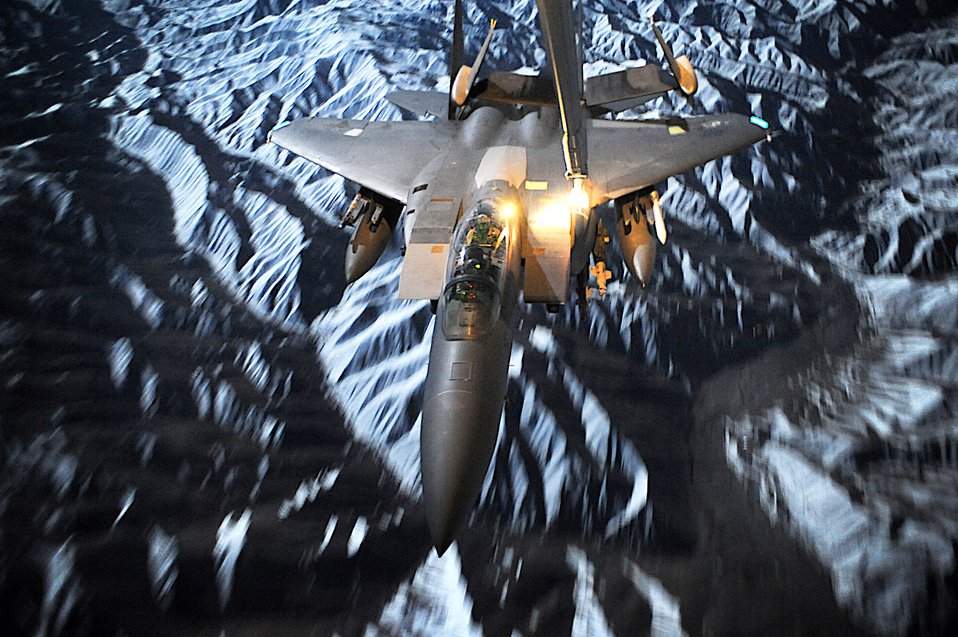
'Fill 'er up, please'

An F-15E Strike Eagle from the 391st Expeditionary Fighter Squadron at Bagram Airfield, Afghanistan, refuels Dec. 12 during a combat mission.